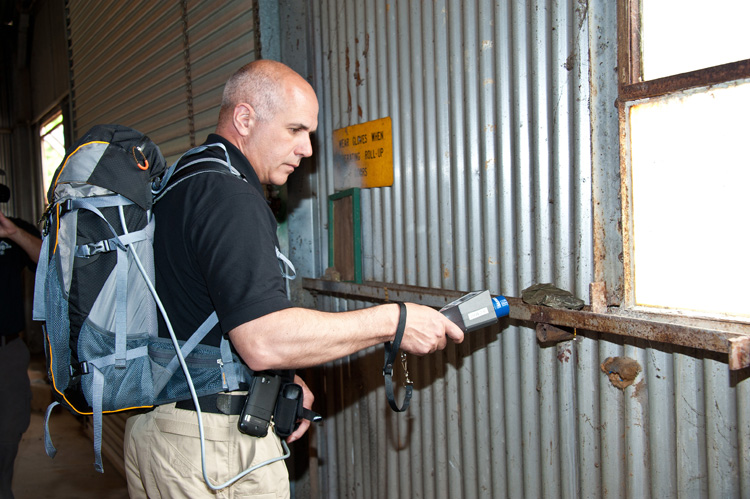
EXPERTS TESTS AGENCIES’ SKILLS AT RADIOLOGICAL DETECTION AND CONTROL

A Philadelphia Police Department team member examines the storage facility, as part of the timed test (SRNL photo).

It was all part of an exercise conducted by the U.S. Department of Energy’s Savannah River National Laboratory (SRNL) on behalf of the Department of Homeland Security’s Domestic Nuclear Detection Office (DNDO). The goal was to challenge state and local agencies’ abilities to protect the public by detecting radioactive materials and responding appropriately in a variety of controlled, but realistic, scenarios.